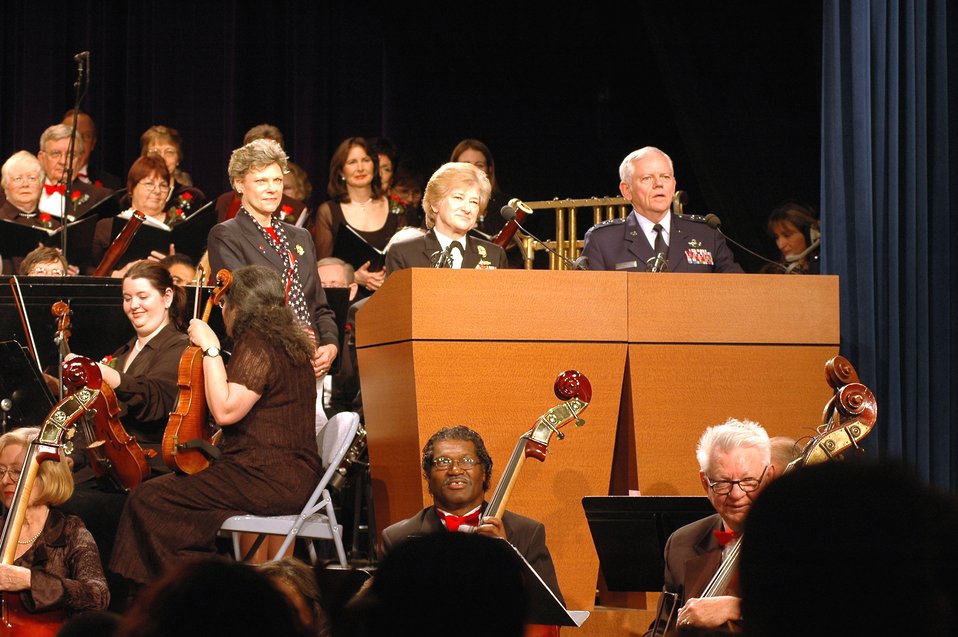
Tribute to the troops

WASHINGTON (AFPN) -- Cokie Roberts, Vice Admiral Ann E. Rondeau and Lt. Gen. Arthur J. Lichte narrate selections between musical acts during a tribute to America's armed forces here Feb. 6. Entertainers, musicians, journalists and senior military leaders gathered at the Pentagon auditorium for the two-hour event, titled